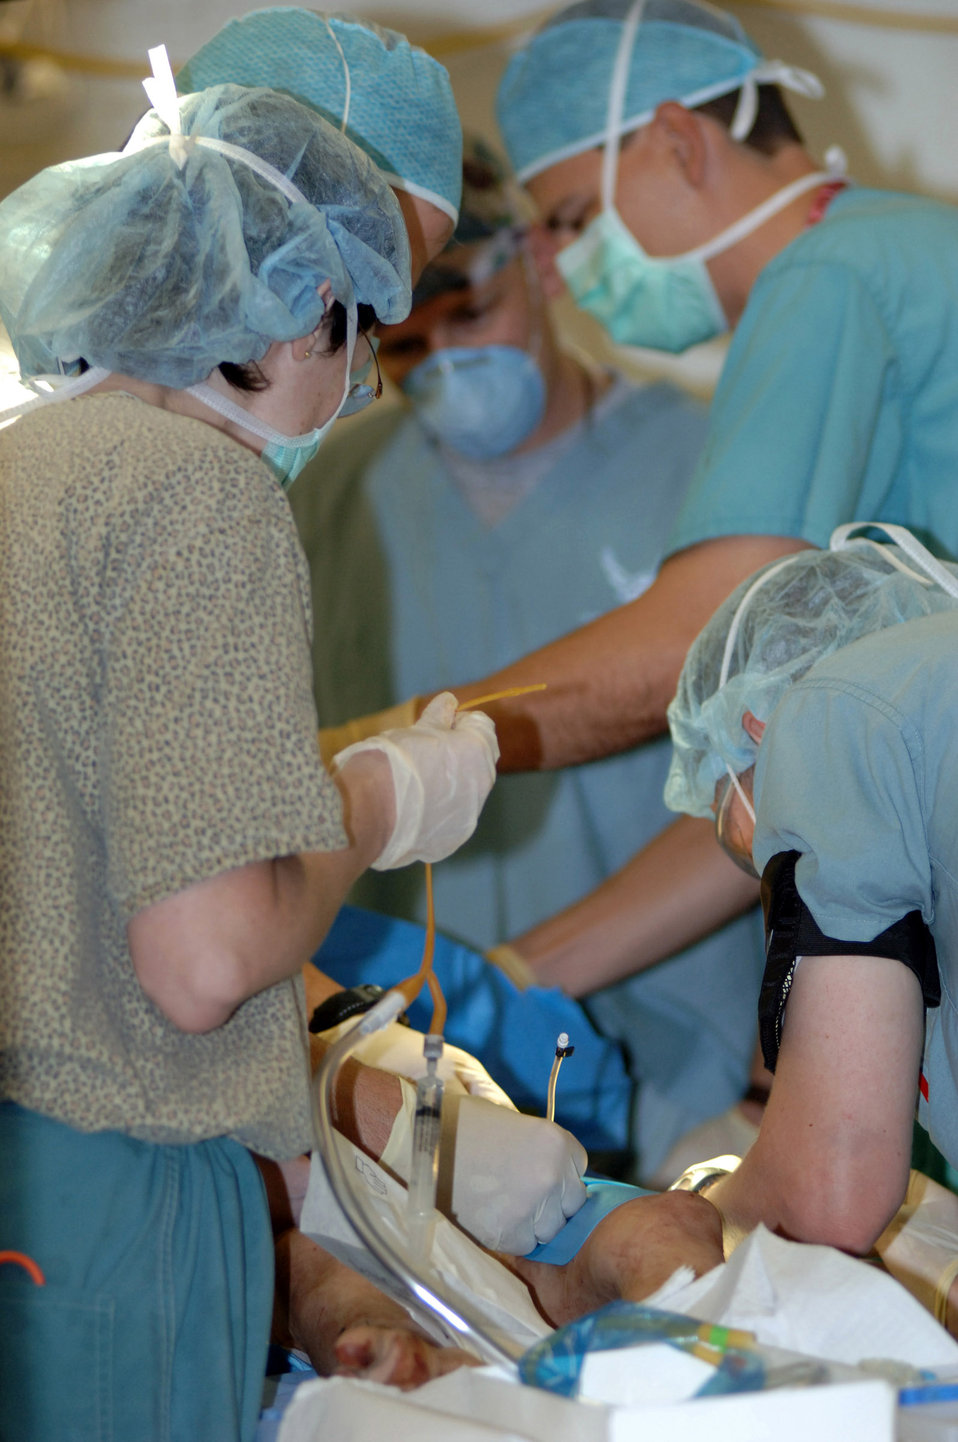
Air Force hospital saves Iraqi lives

BALAD AIR BASE, Iraq -- Air Force surgeons operate on an Iraqi child who was caught in car bomb blasts that occurred in the town of Balad on Sept. 29. Injured Iraqis were rushed here to the Air Force Theater Hospital following the attack.